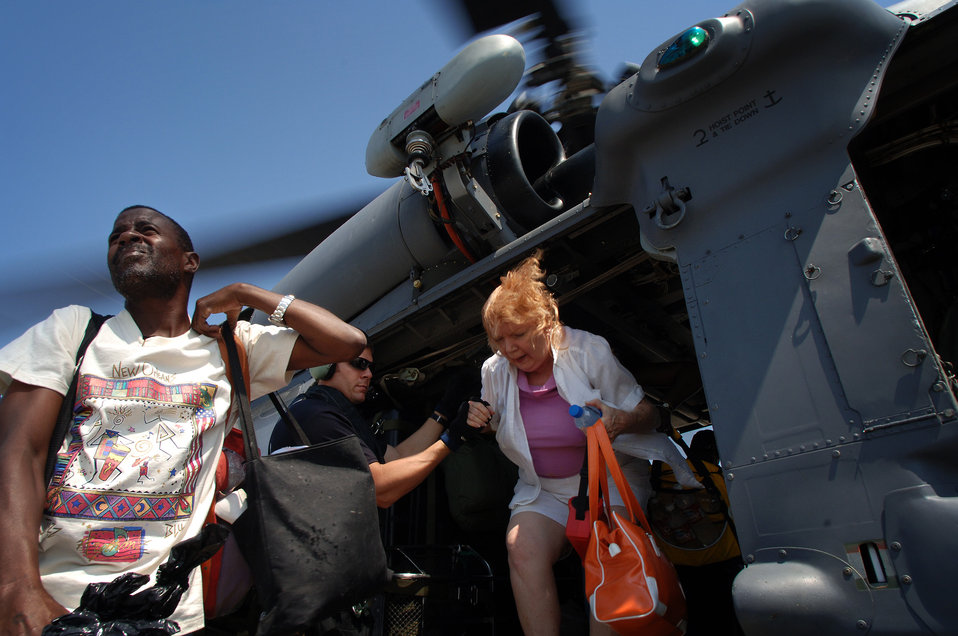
Some rescue teams leave, but Jackson mission continues

NEW ORLEANS -- Air Force rescue crews fly evacuees from temporary collection points to the New Orleans airport and move to more permanent accommodations.